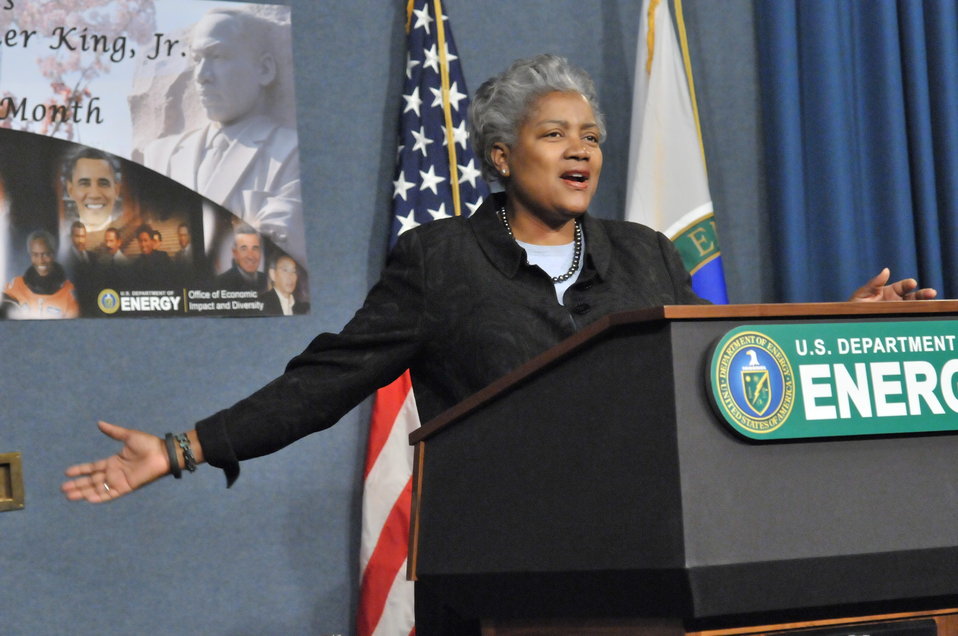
DEPARTMENT OF ENERGY -MARTIN LUTHER KING / BLACK HISTORY MONTH COMMEMORATIVE PROGRAM WITH DOE SECRETARY E. MONIZ IN ATTENDANCE